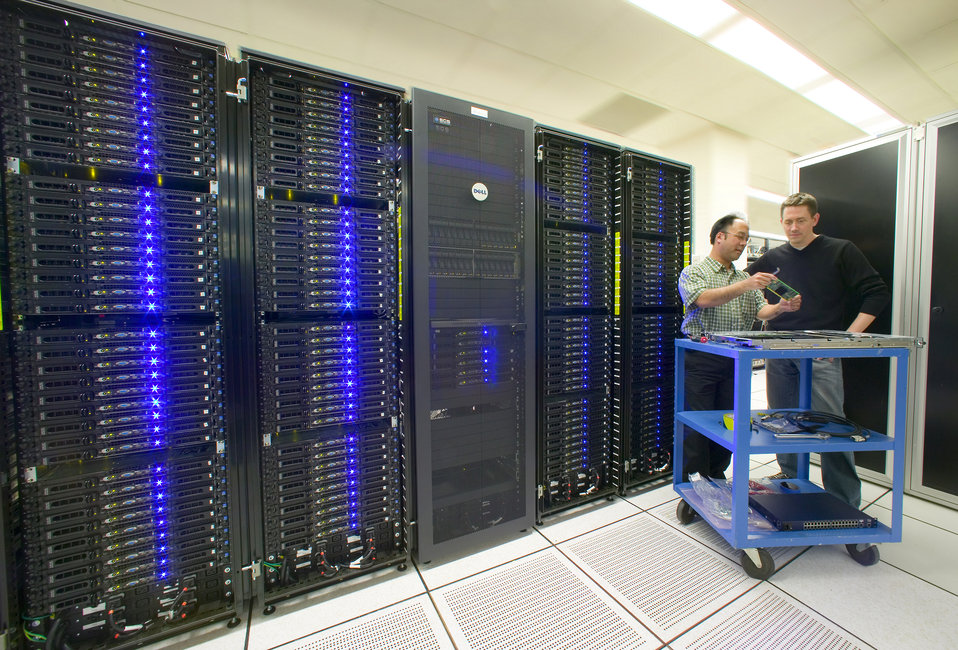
SHOWN IS THE MOLECULAR FOUNDRY COMPUTER CLUSTER.

THE MOLECULAR FOUNDRY IS A DOE USER FACILITY CHARGED WITH PROVIDING SUPPORT TO NANOSCIENCE RESEARCHERS IN ACADEMIC, GOVERNMENT AND INDUSTRIAL LABORATORIES AROUND THE WORLD. THE FOUNDRY PROVIDES USERS WITH INSTRUMENTS, TECHNIQUES AND COLLABORATORS TO ENHANCE THEIR STUDIES OF SYNTHESIS, CHARACTERIZATION AND THEORY OF NANOSCALE MATERIALS. IT'S SIX FACILITIES FOCUS ON BOTH 'SOFT' (BIOLOGICAL AND POLYMERIC) AND 'HARD' (INORGANIC AND MICROFABRICATED) NANOSTRUCTURES BUILDING BLOCKS, AND THEIR INTEGRATION INTO COMPLEX FUNCTIONAL ASSEMBLIES.